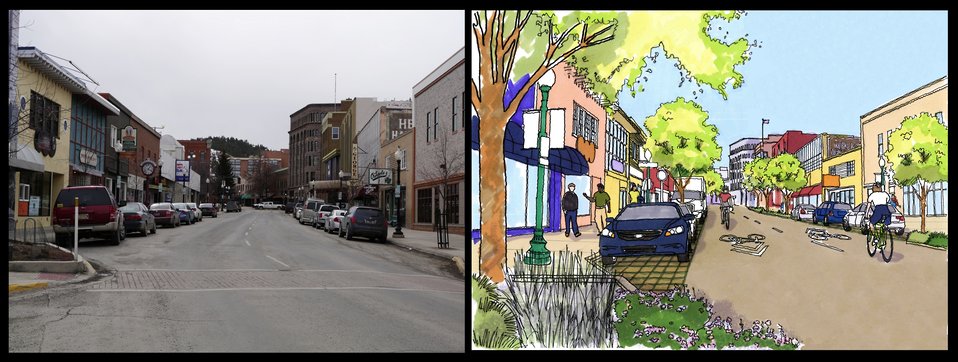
Greening America’s Capitals Before / After, Helena, MT

This design option for Last Chance Gulch shows on-street parking, paving that allows water to fall through to the soil, shared lanes for bikes and vehicles, and new trees in 'stormwater planters,' which are installed in sidewalks to better manage street and sidewalk runoff.

www.epa.gov/smartgrowth/greencapitals.htm

EPA's Greening America's Capitals program helps cities include sustainable design strategies --such as green infrastructure -- in their planning and development. These concepts lead to distinctive neighborhoods that enjoy multiple social, economic, and environmental benefits. Cities are selected through a competitive application process, and many have begun to implement these enhancements with private, as well as local, state, and other federal, investments.
December 3, 2013